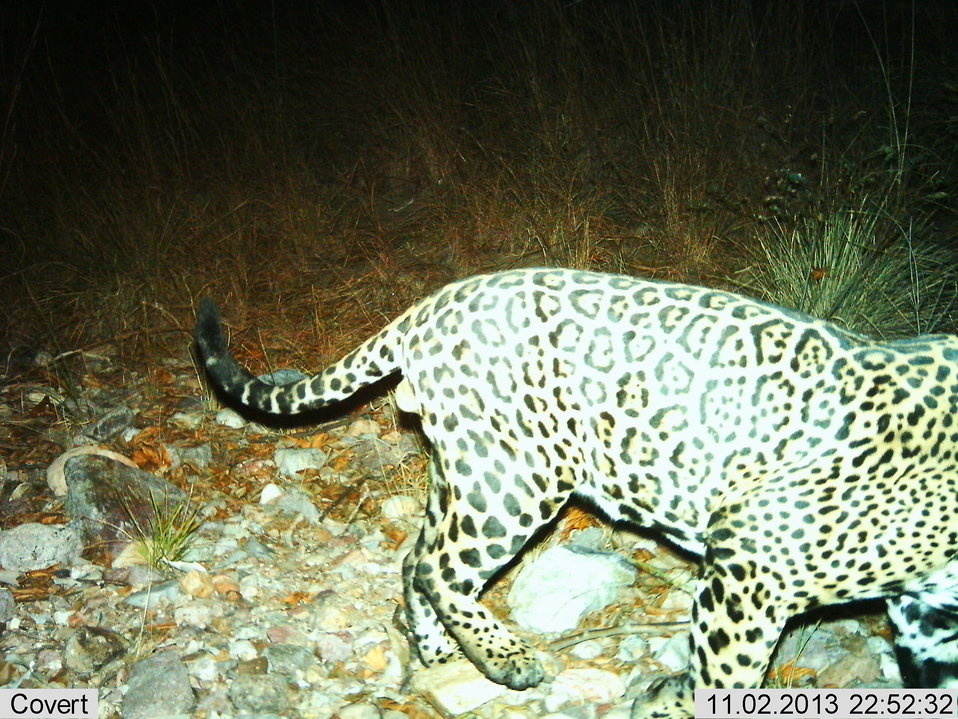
Male jaguar photographed by automatic wildlife cameras in the Santa Rita Mountains on November 2, 2013, as part of a U.S. Fish and Wildlife Service/Department of Homeland Security-funded jaguar survey conducted by University of Arizona. This is the third of three photos from November 2 at this location. This photo location is new but not far from previous photo detections.